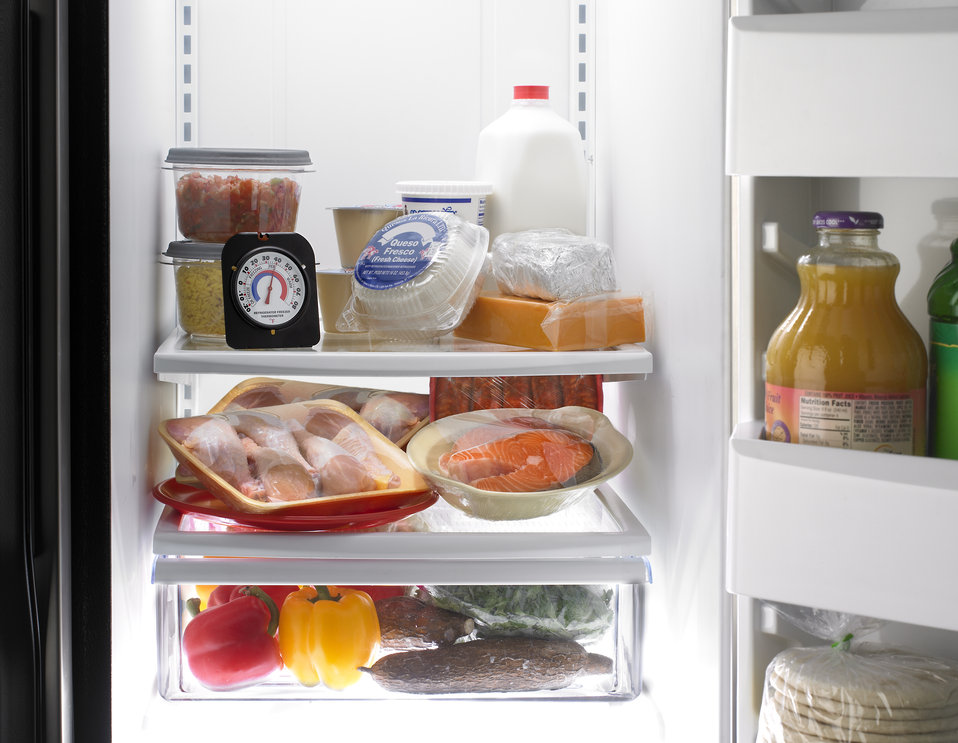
Never thaw foods in a garage, basement, car, dishwasher or plastic garbage bag; out on the kitchen counter, outdoors or on the porch. These methods can leave your foods unsafe to eat. There are three safe ways to thaw food: in the refrigerator, in cold water, or in the microwave. It's best to plan ahead for slow, safe thawing in the refrigerator. Small items may defrost overnight but most foods require a day or two.